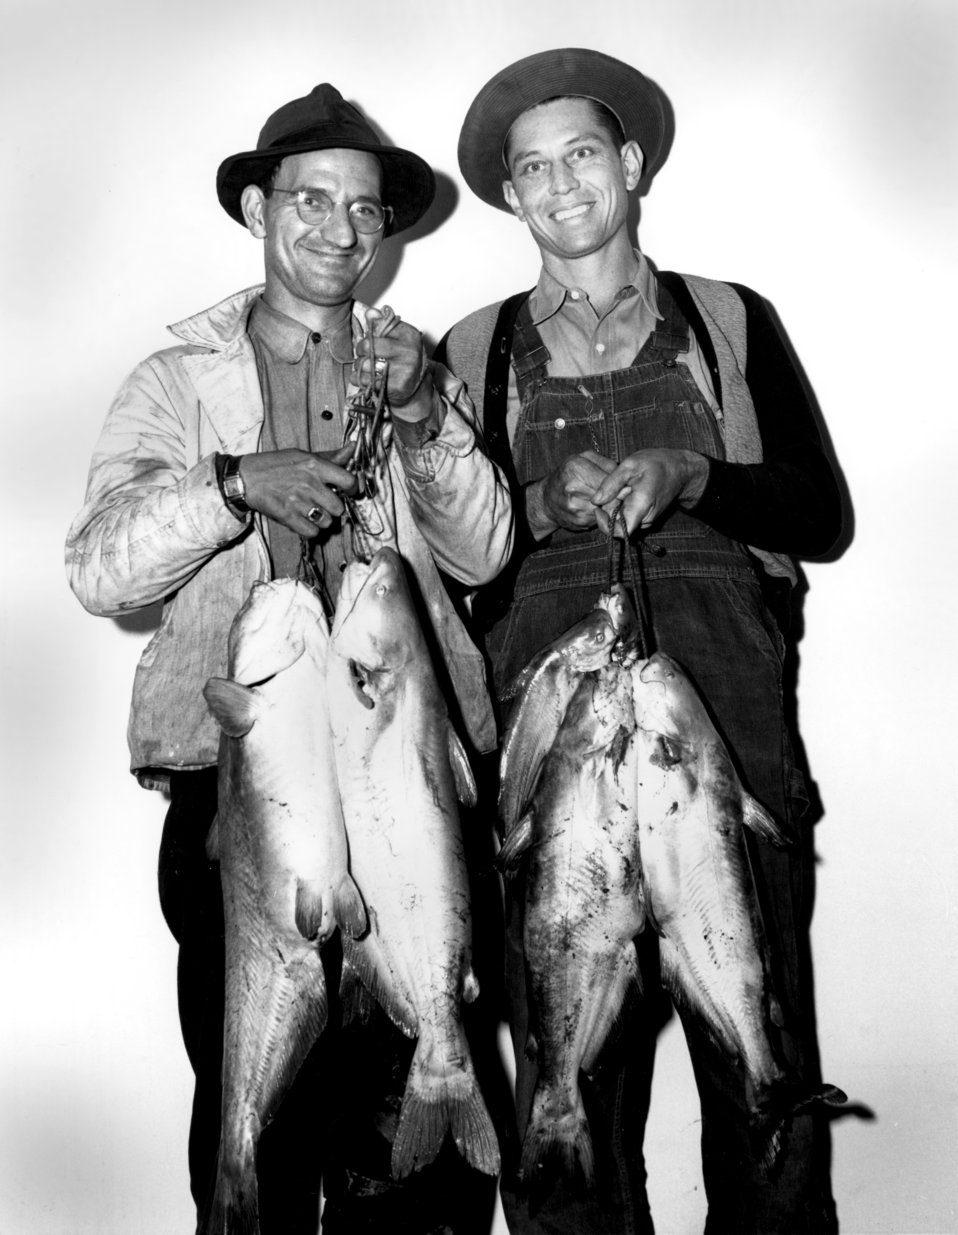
Fishermen Oak Ridge 1945

1204 DOE photo Ed Westcott 10-14-1945 L to R L.N. Conover and G.E. Tidwell Oak Ridge Tennessee